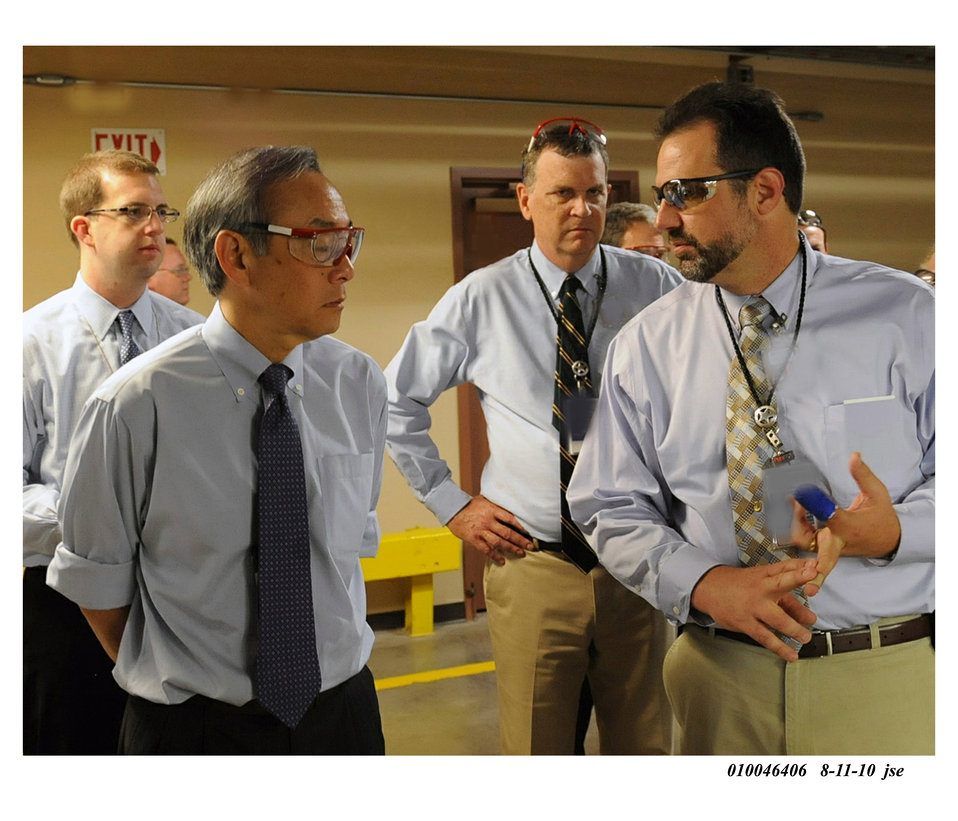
Secretary Chu gets briefed on NNSA’s weapons dismantlement programs during visit to Pantex Plant. (Aug. 11, 2010)